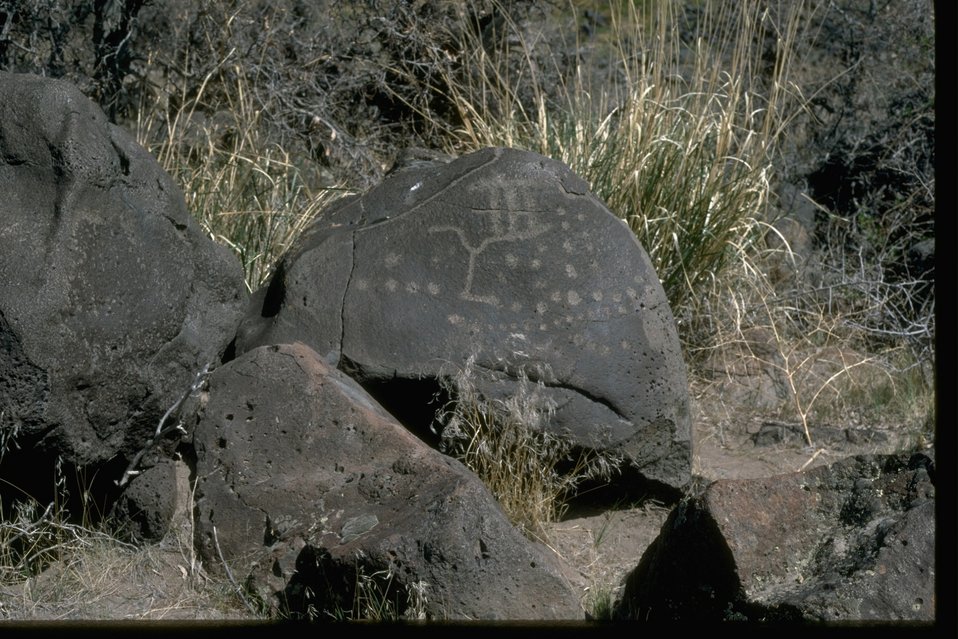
Rock Art found 2 miles below the Hole in the Ground. OR 3-59